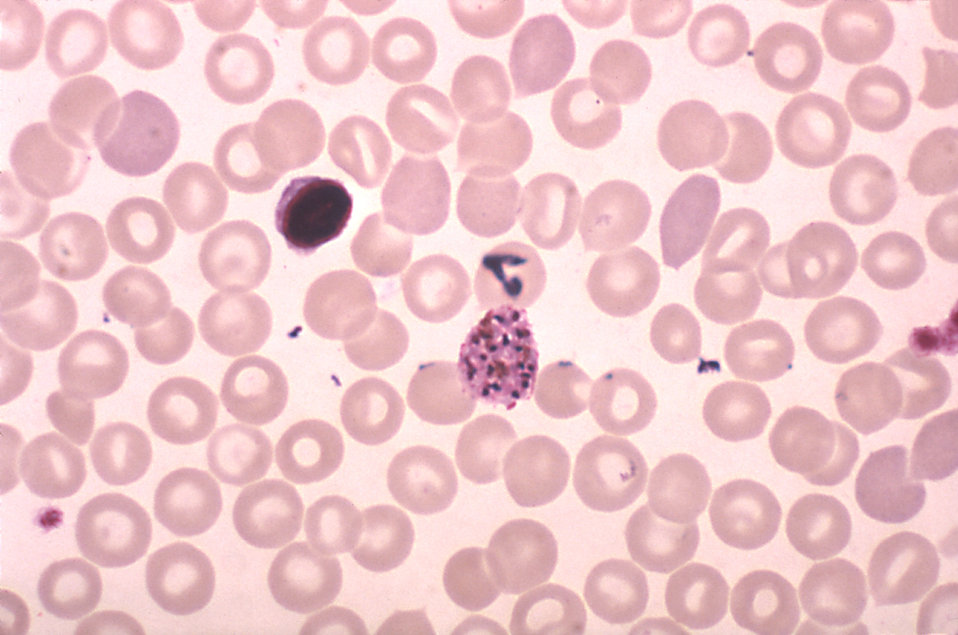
This thin film micrograph depicts a mature Plasmodium vivax schizont with 20 merozoites, using Giemsa stain; Mag. 1000X.